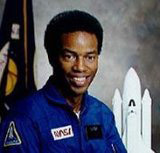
Col. Guion Bluford: First African-American astronaut